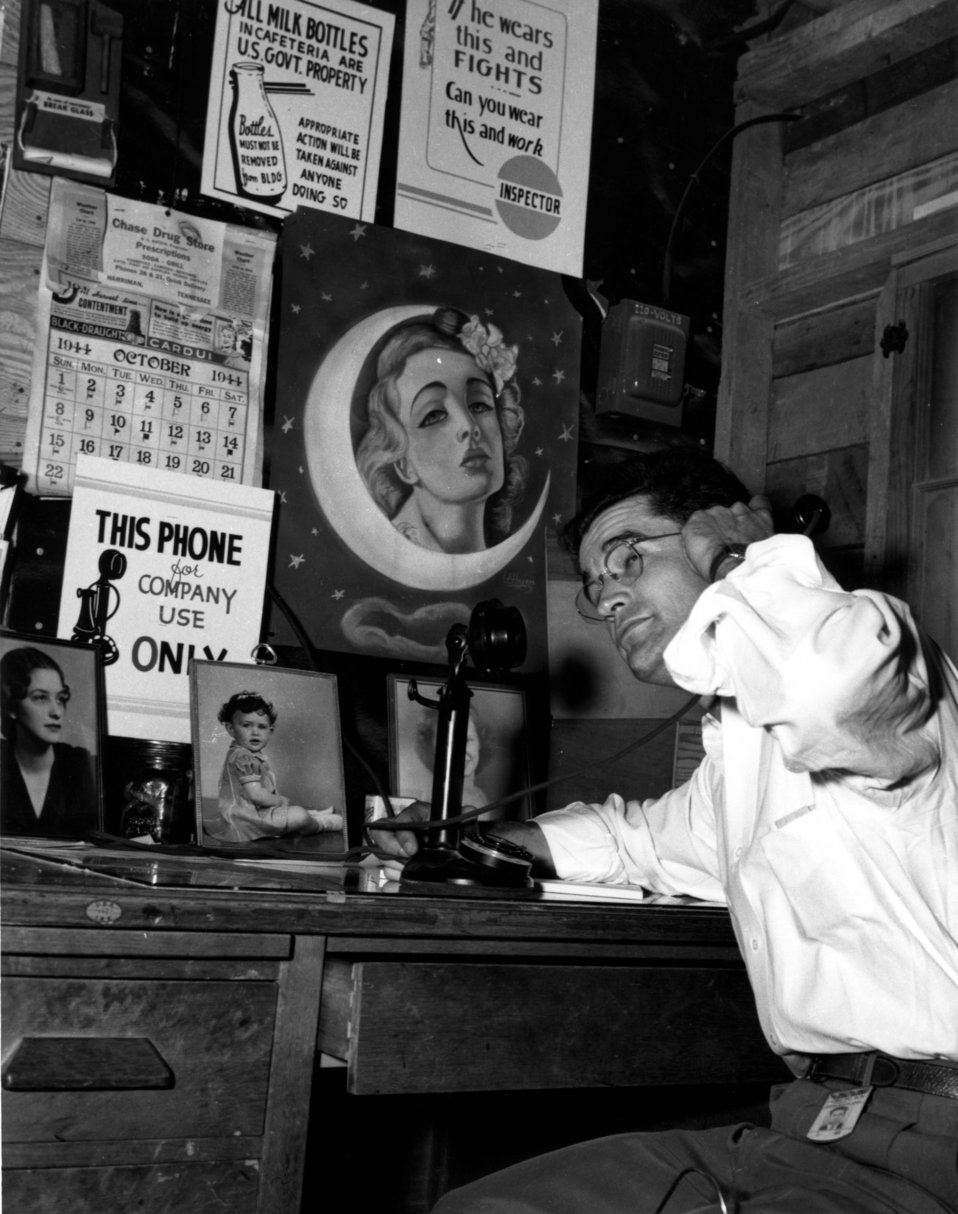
Daily Life at Oak Ridge